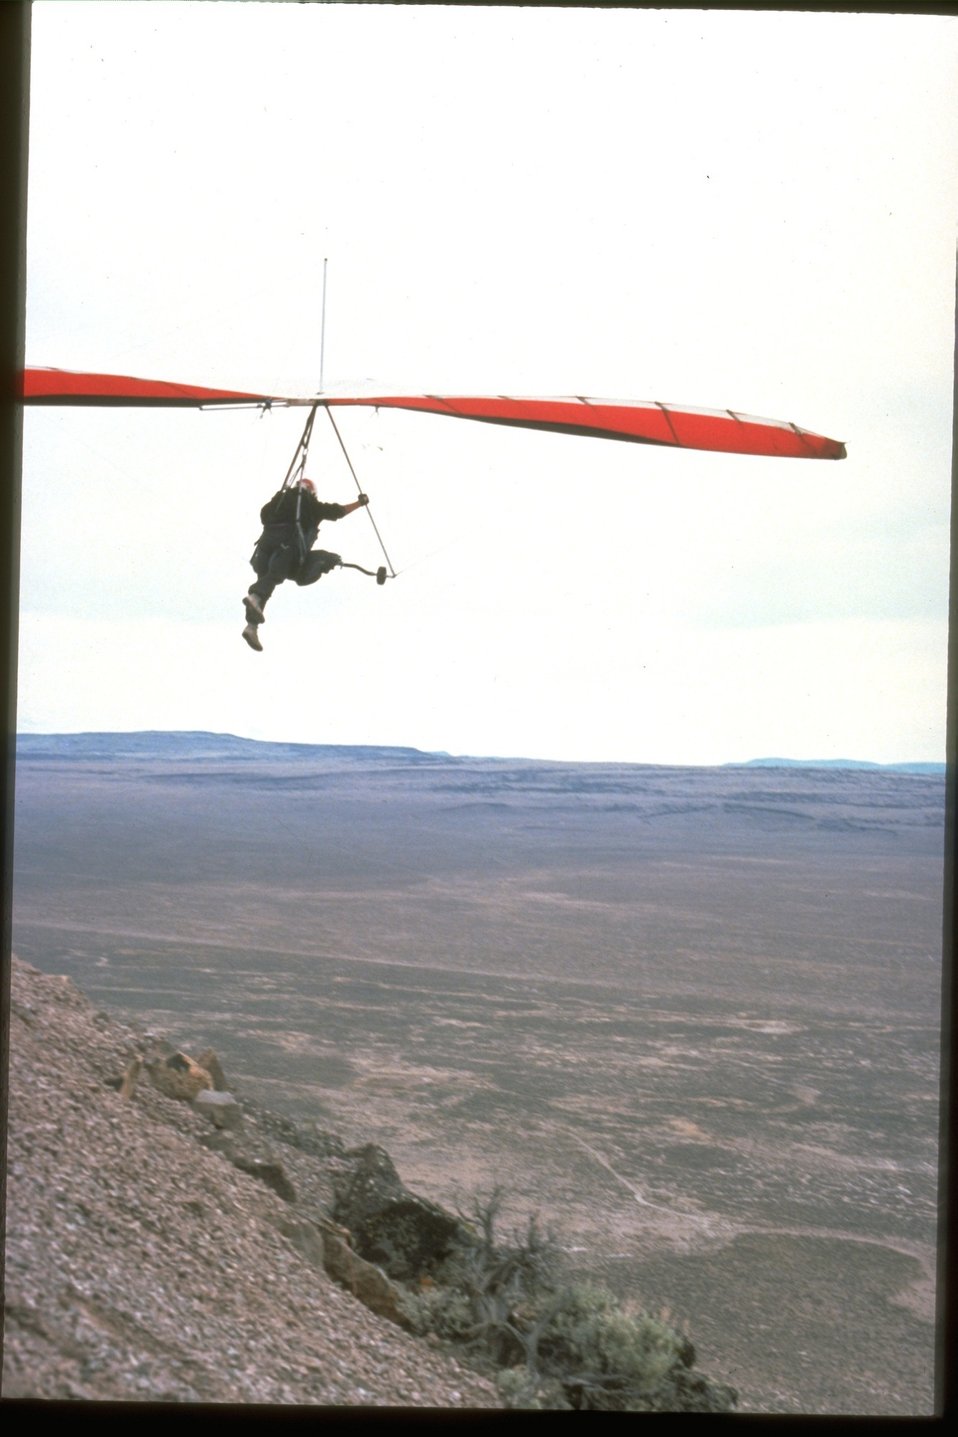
Hang glider at Doherty Slide.